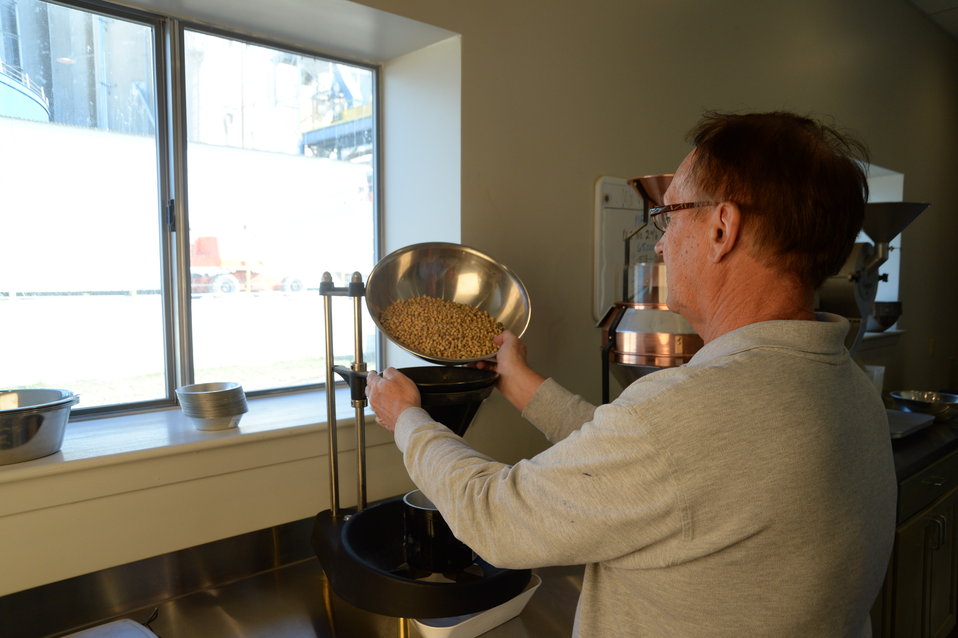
U.S. Department of Agriculture (USDA) Grain Inspection, Packers and Stockyards Administration (GIPSA) Federal Grain Inspection Service (FGIS) employee tests U.S. grain ready for export near the Port of New Orleans in New Orleans, LA on Tuesday, Nov. 19, 2013.